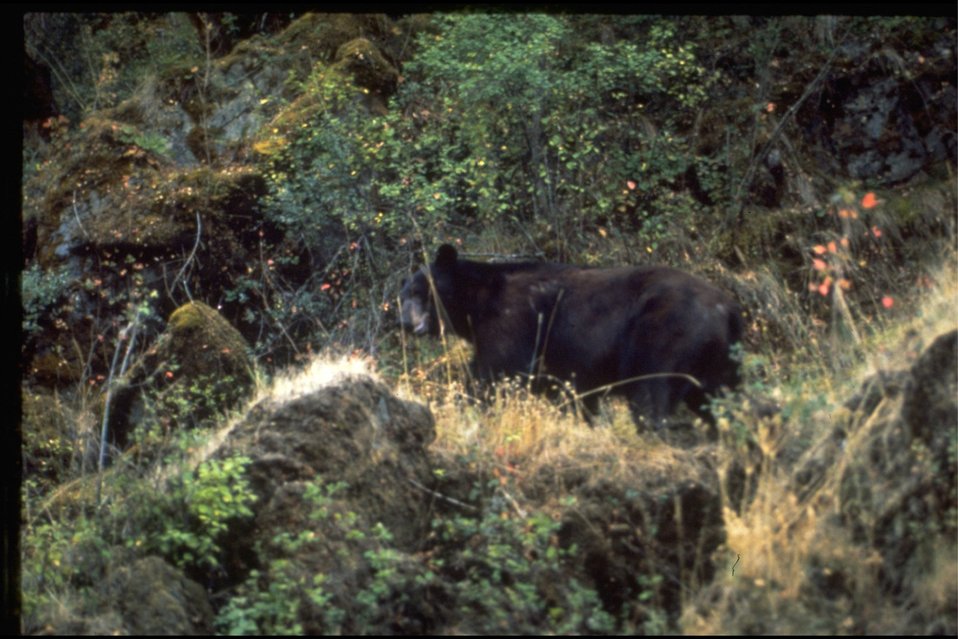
Rogue River - Black Bear.